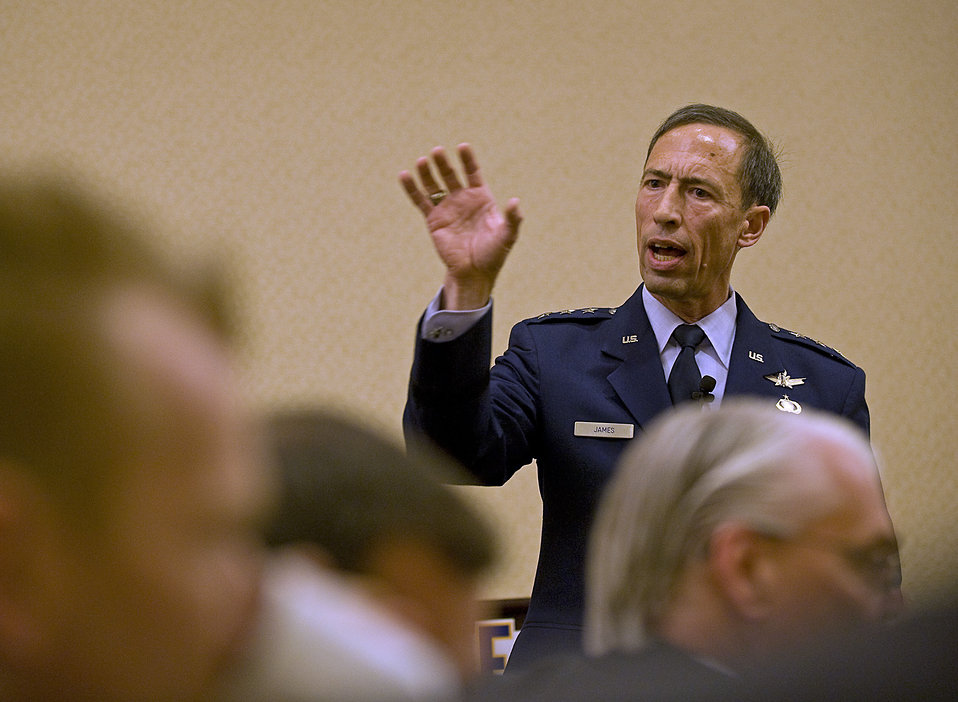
Air Force leader talks about future of ISR

Lt. Gen. Larry D. James speaks April 26, 2012, during the Air Force Association breakfast at the Crystal City Marriott, Va. The AFA breakfast program is a monthly series that provides a venue for senior Air Force and DOD leaders to communicate directly with the public and the press. James is the deputy chief of staff for ISR at Headquarters Air Force.